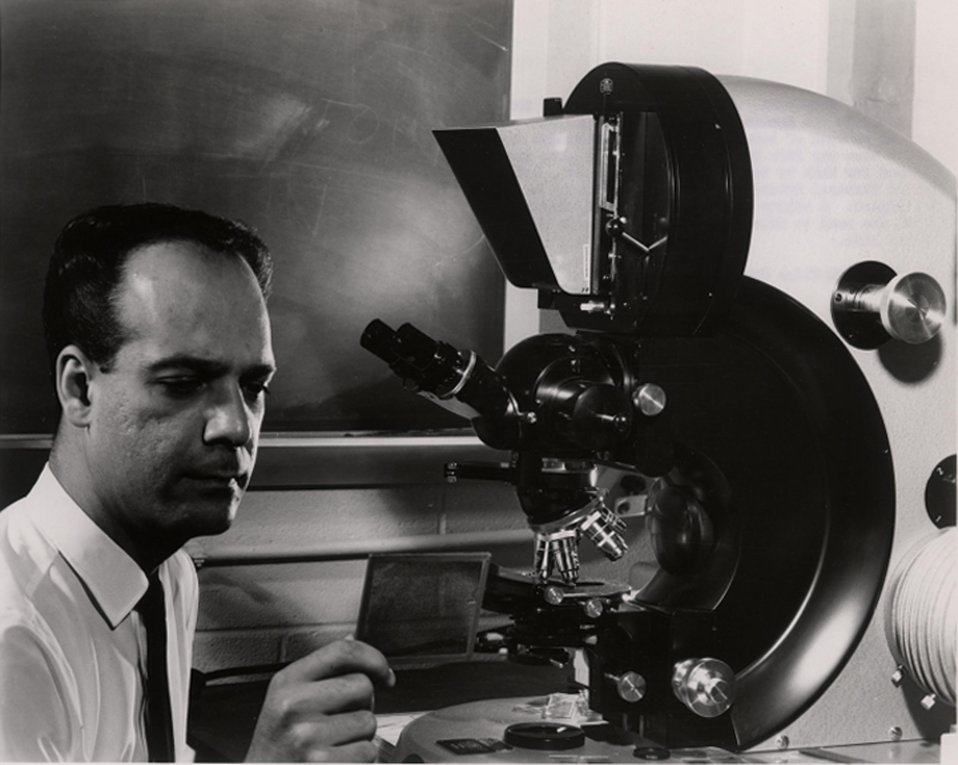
Lunar samples brought back to earth by the Apollo 11 and 12 astronauts contain no form of life.